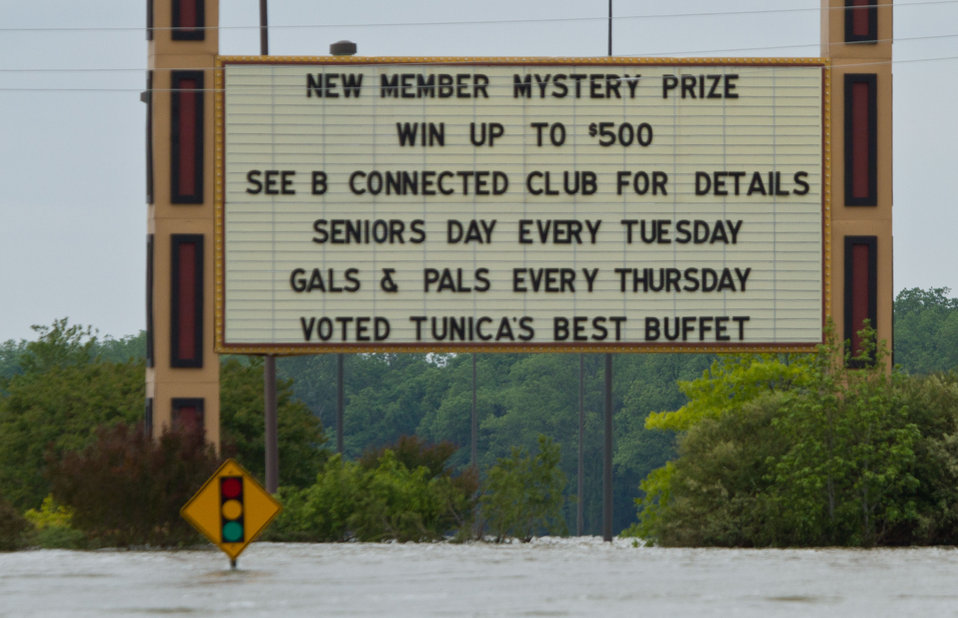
Floods waters from Mississippi River inundated casinos and farms that surround Tunica, MS, on Sunday, May 15. 2011.